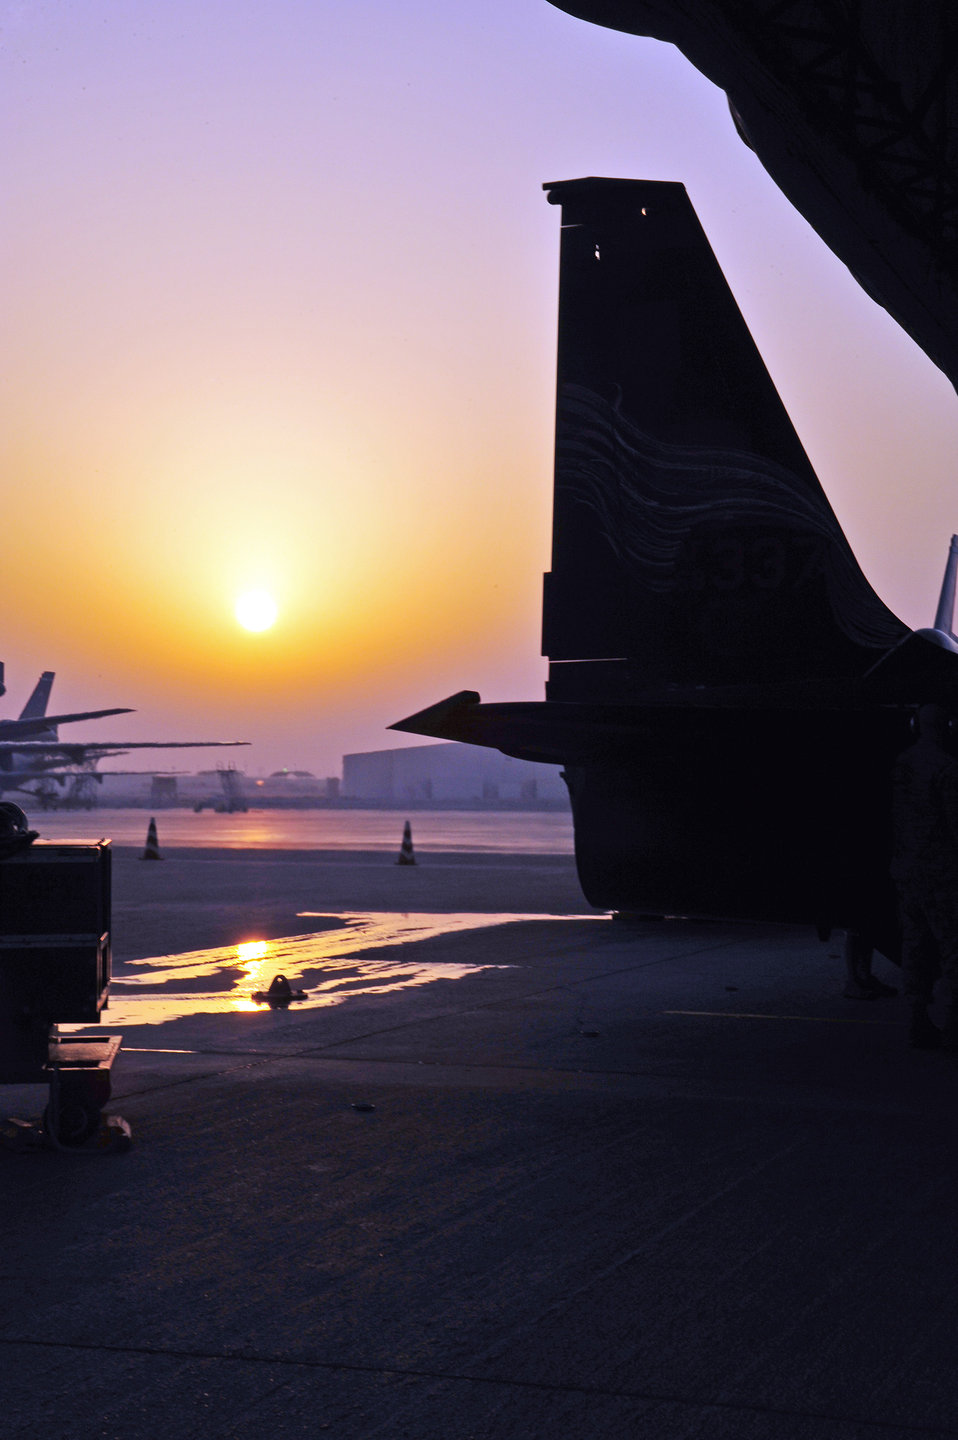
U-2 exceeds 25,000th hour of flight

The tail of U-2 aircraft No. 068-0337 is silhouetted in the dawn of Oct. 18, 2009, at an air base in Southwest Asia. The plane was piloted by Lt. Col. Robert Wehner of the 380th Expeditionary Reconnaissance Squadron on a mission to exceed 25,000 hours of flight for the aircraft.